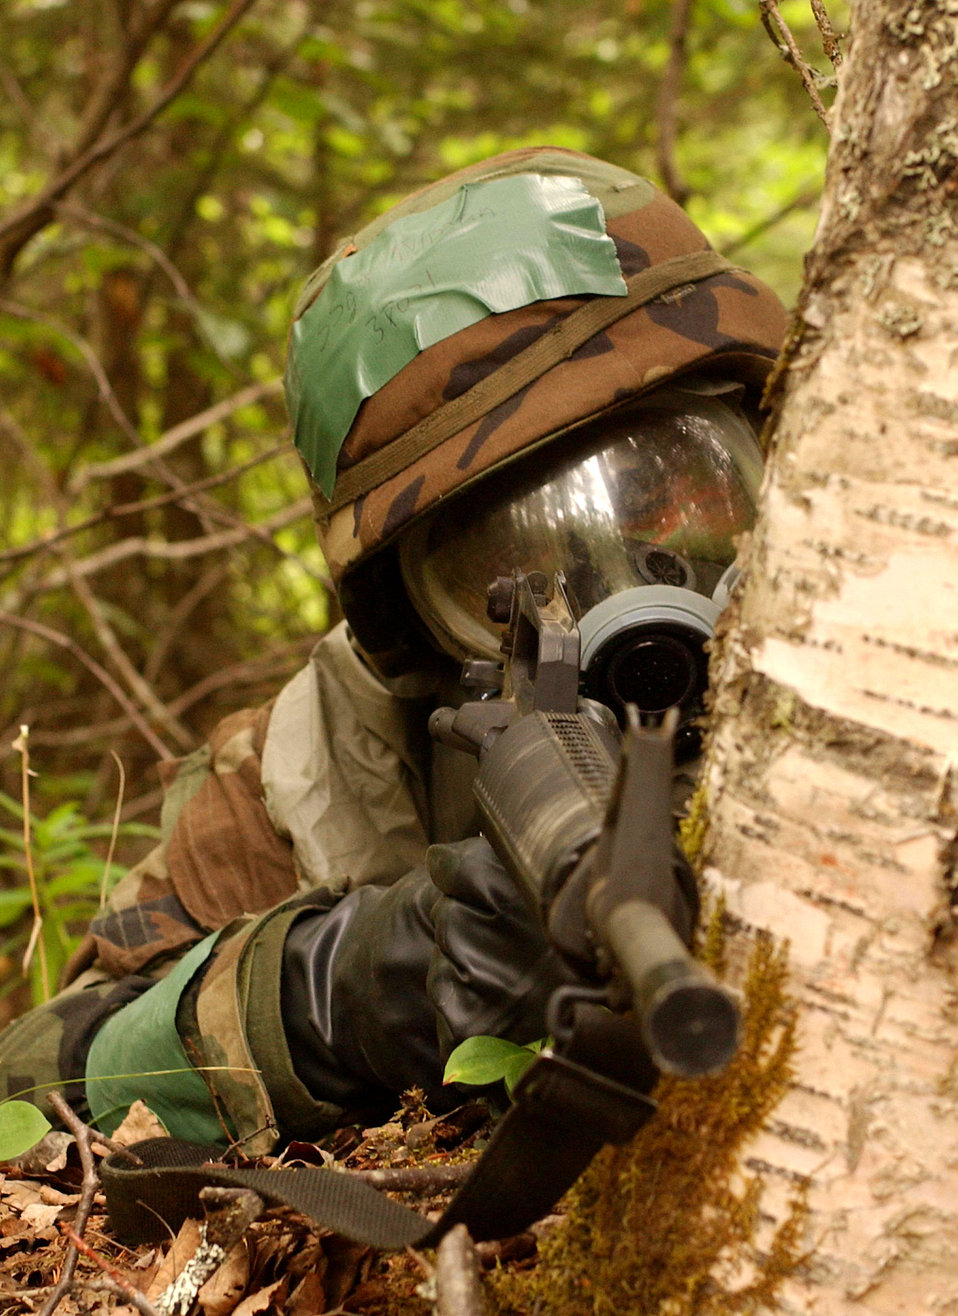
Gassed and ready to roll

ELMENDOEF AIR FORCE BASE, Alaska --Staff Sgt. Michael Tylman, 3rd Security Forces Squadron, takes defensive cover after donning his mask during Polar Force '03. The exercise tests various air base ground defense maneuvers and scenarios.